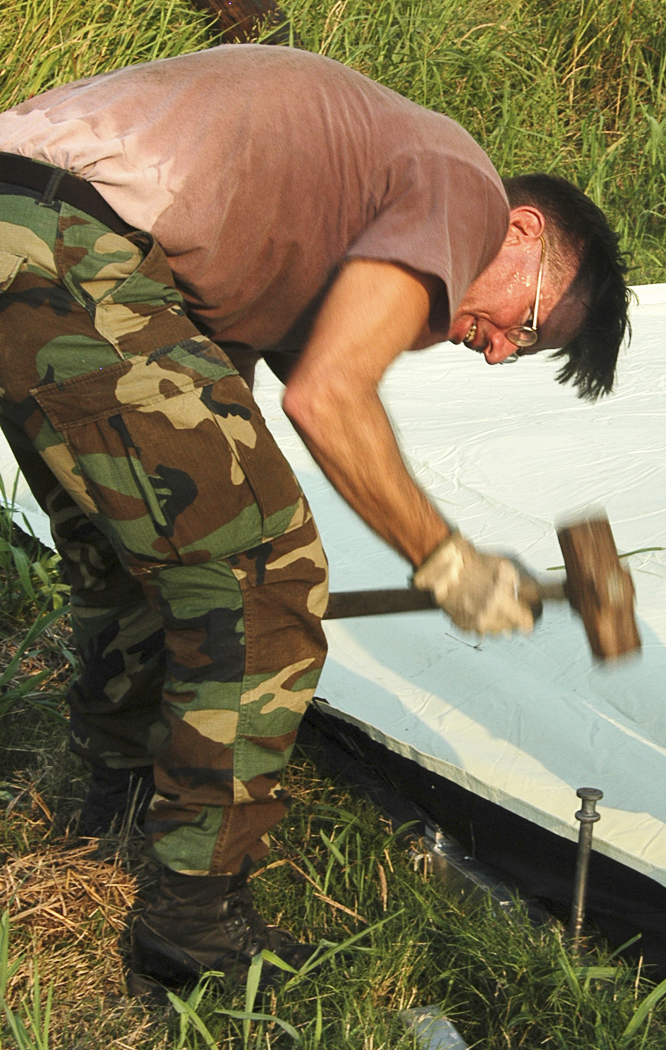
Tent city

NEW ORLEANS -- Tech. Sgt. Charles Spain sets up a tent Sept. 3 at Louis Armstrong International Airport here. He is part of a unit deployed to the airport to begin construction on a massive tent city that will house Airmen attending to Hurricane Katrina victims. Sergeant Spain is a 49th Materiel Maintenance Group structures specialist from Holloman Air Force Base, N.M.